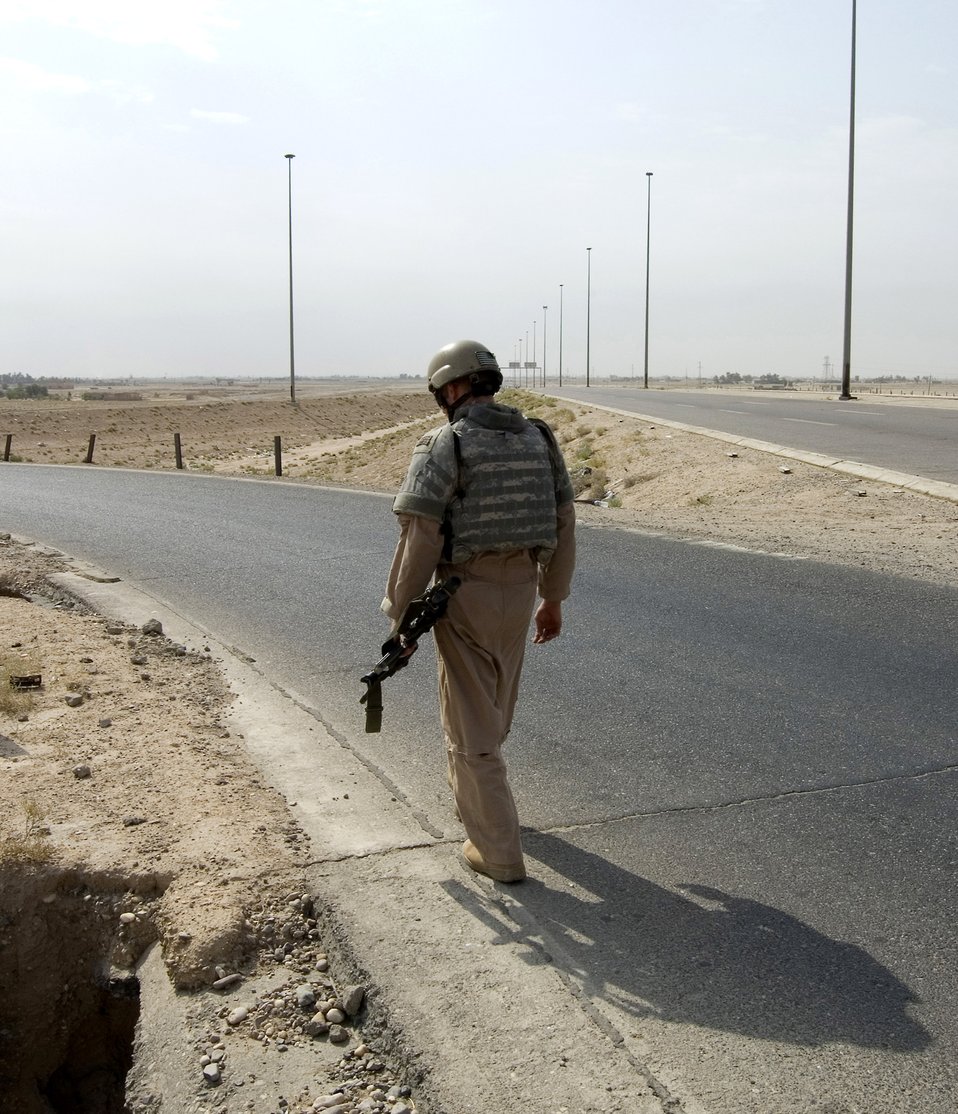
Airmen help keep Iraqi supply routes open

Staff Sgt. Charles Lemley searches for improvised explosive devices at an intersection on a convoy route in August in southern Iraq. Sergeant Lemley is assigned to the 887th Expeditionary Security Forces Squadron.